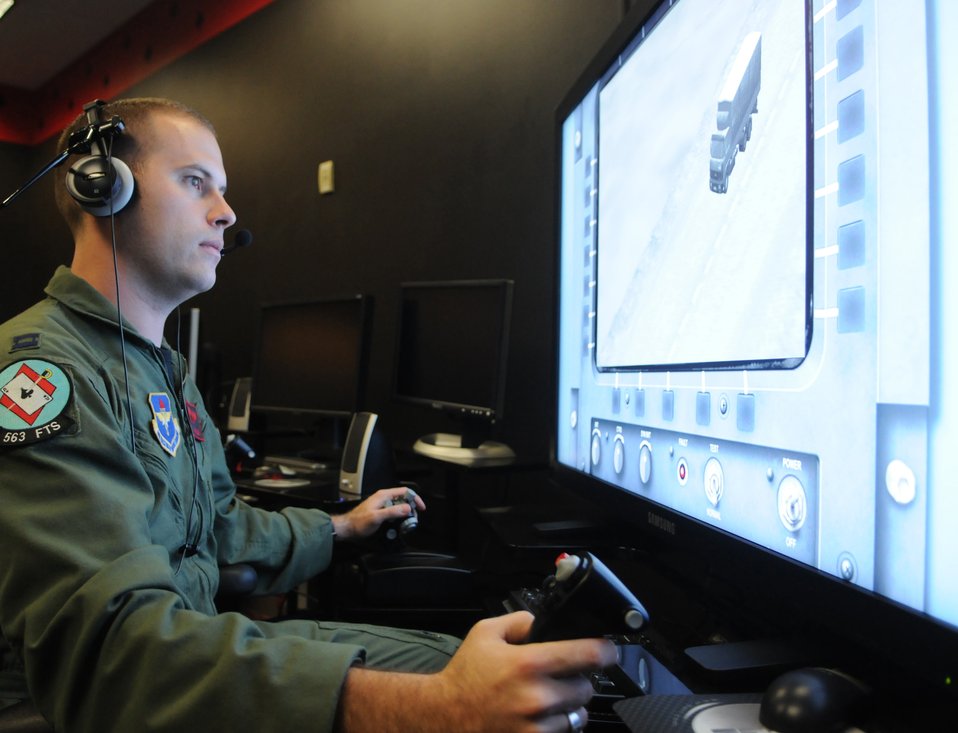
Future UAS pilots will simulate air and land battles in course at Randolph AFB

Capt. Sam Allen, 563rd Flying Training Squadron instructor and Unmanned Aircraft Systems Fundamentals Course director at Randolph Air Force Base, Texas, operates the controls of a battlespace simulator in the course's laboratory.